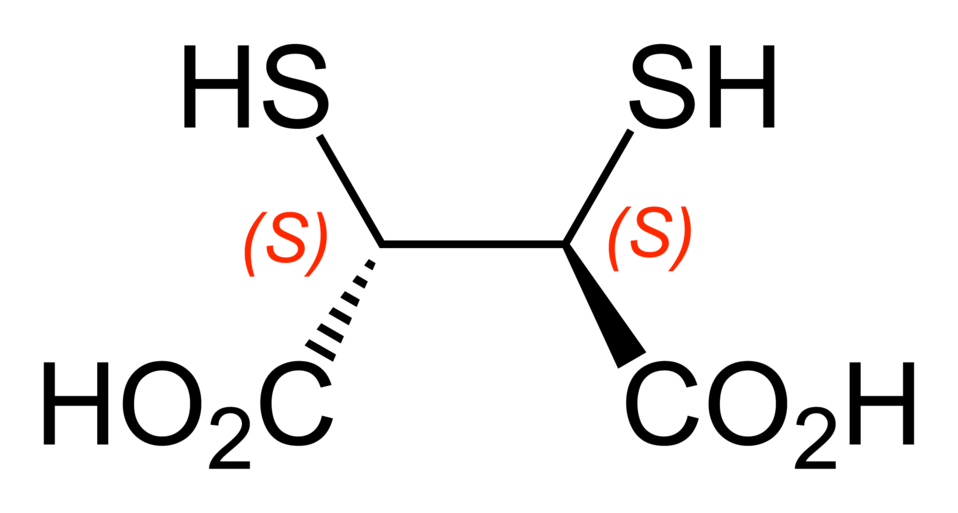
Skeletal formula of (2S,3S)-2,3-dimercaptosuccinic acid, C4H6O4S2. Structure drawn in ChemBioDraw Ultra 12.0.